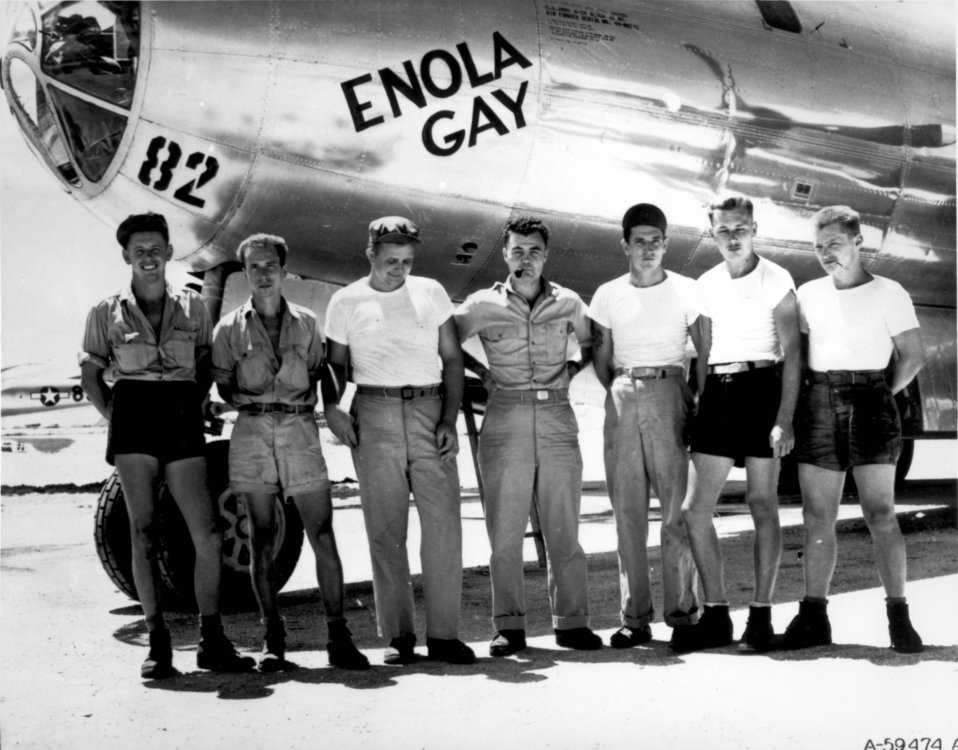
Crew of the B-29

1940's -- The ground crew of the B-29